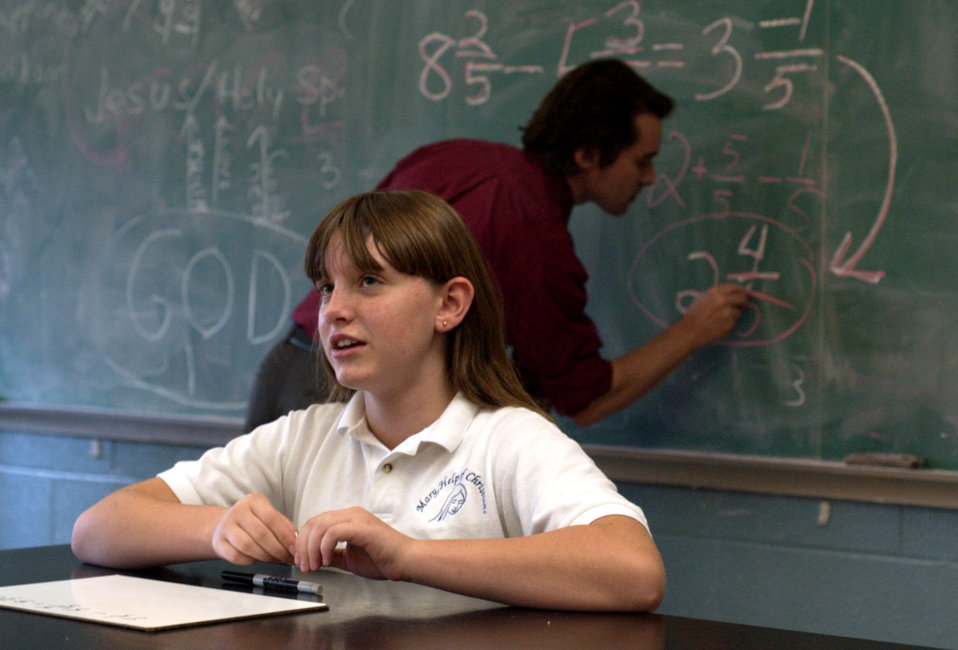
Student invents new math process

FAIRBORN, Ohio -- Killie Rick explains her new method of solving subtraction of fractions problems, as her teacher, Colin McCabe, puts an example on the chalkboard. She uses negative numbers, which McCabe said he had never seen before. Killie is a seventh-grade student at Mary Help of Christians school here. Her mother is Terri Rick, an employee at nearby Wright-Patterson Air Force Base.